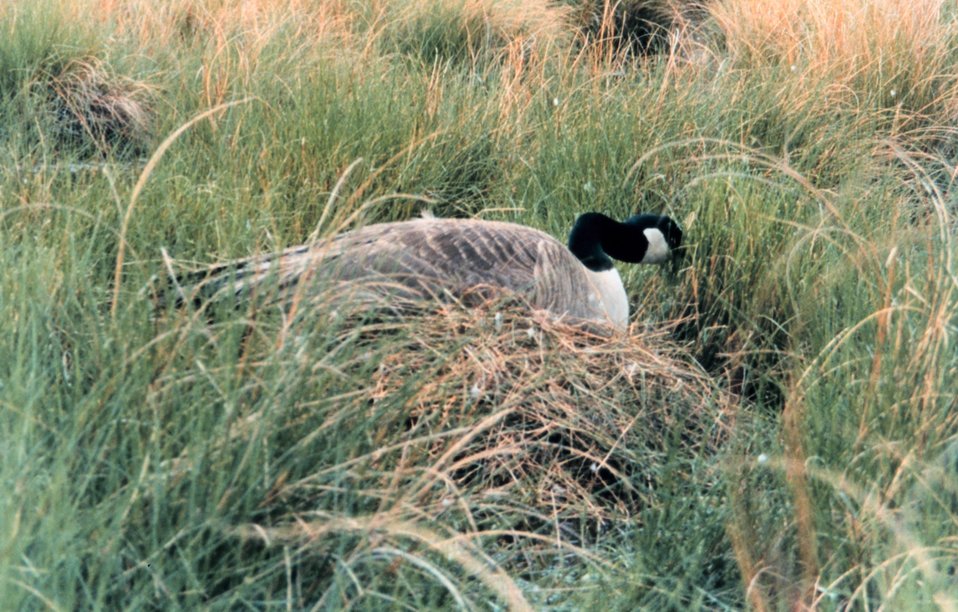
Female Canada goose setting on nest. Trying desperately to stay out of sight.